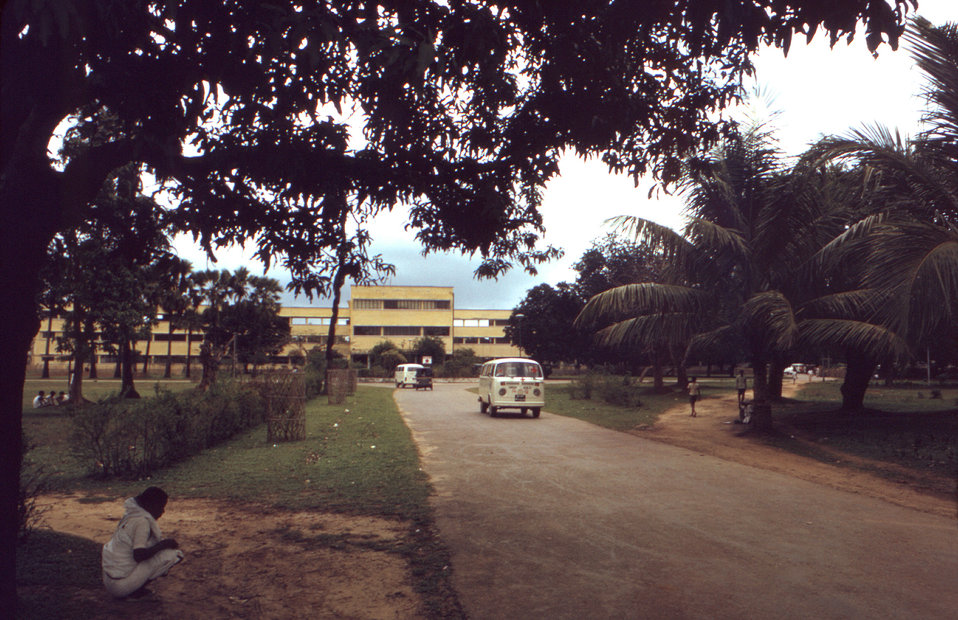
This 1974 image was photographed during the world wide smallpox eradication efforts in the country of Bangladesh, on the site of that country's smallpox headquarters.